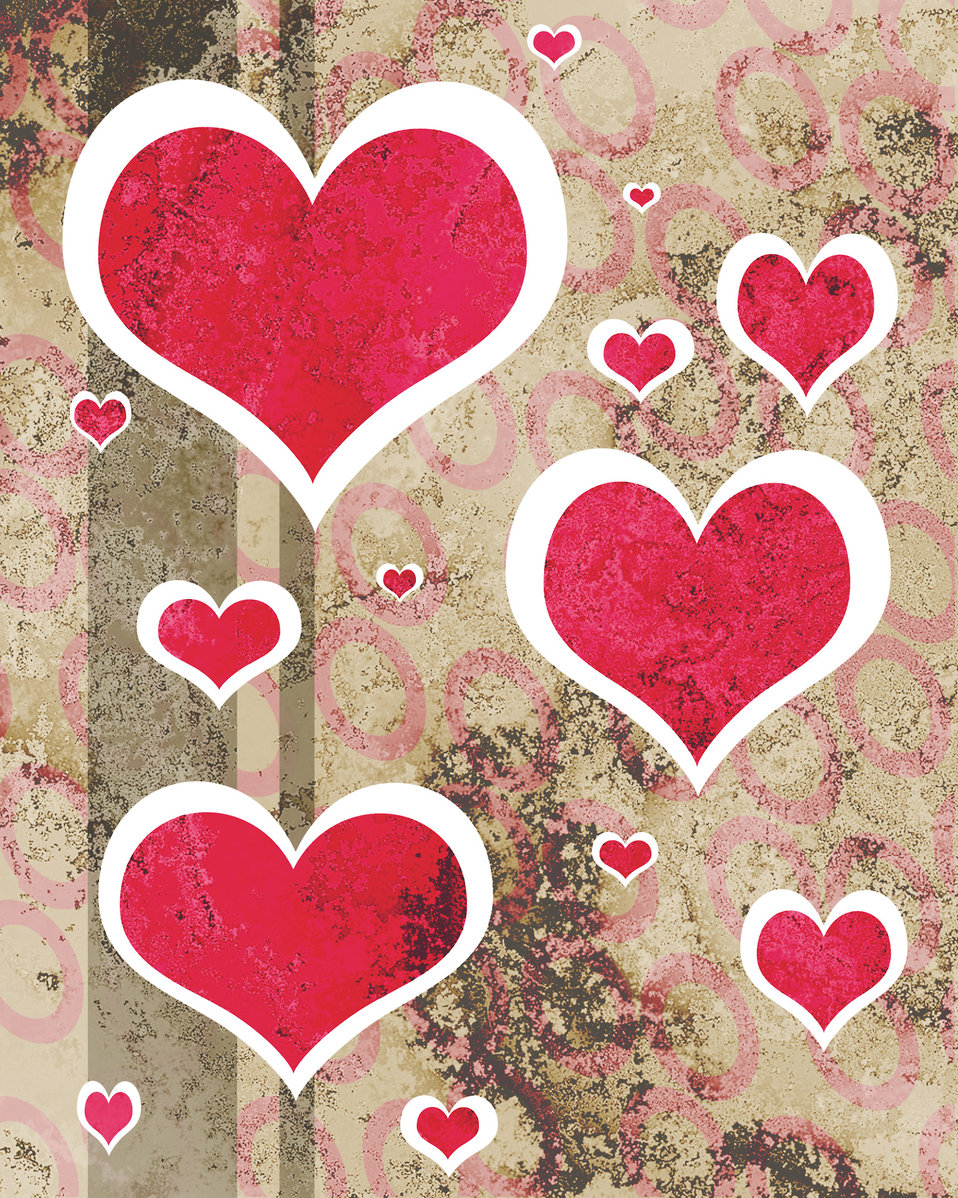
Distressed hearts red

Distressed hearts.